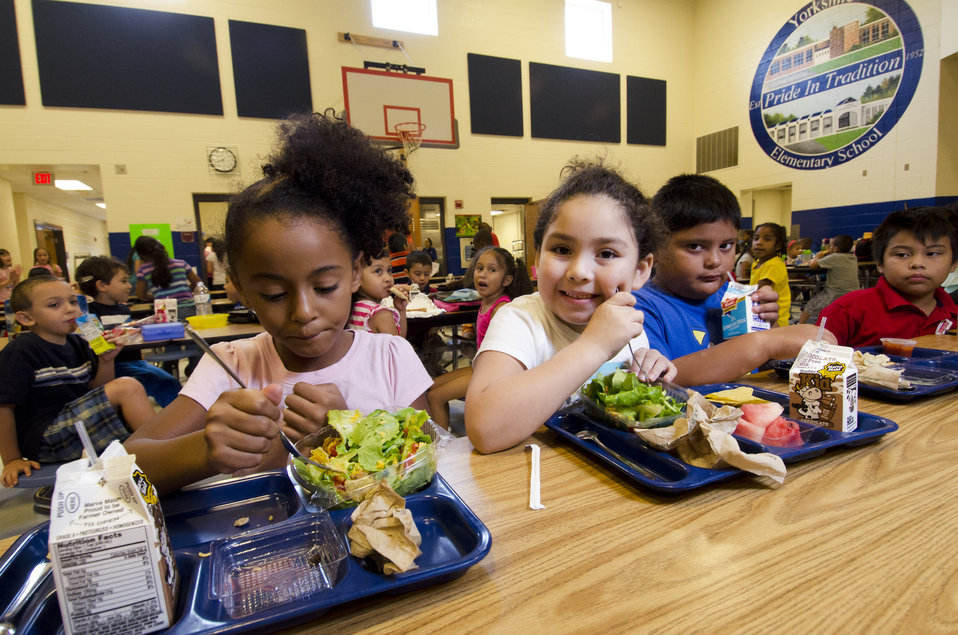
School lunch staff and students enjoy the new school lunch menu created to meet the new standards at the Yorkshire Elementary School in Manassas, VA on Friday, Sept. 7, 2012.